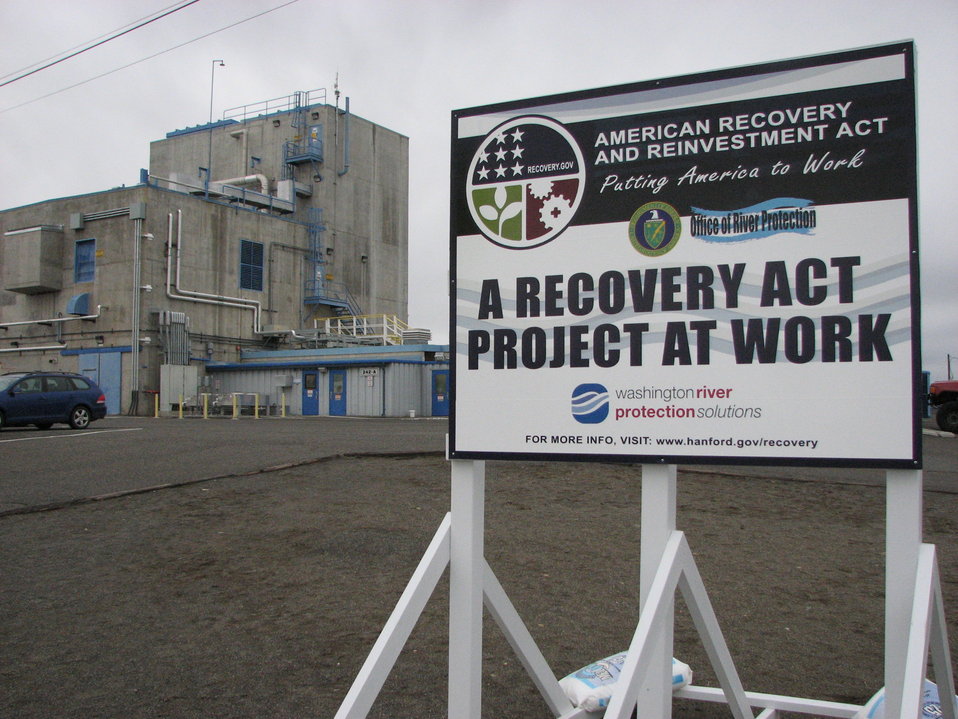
Office of River Protection - Recovery Act work